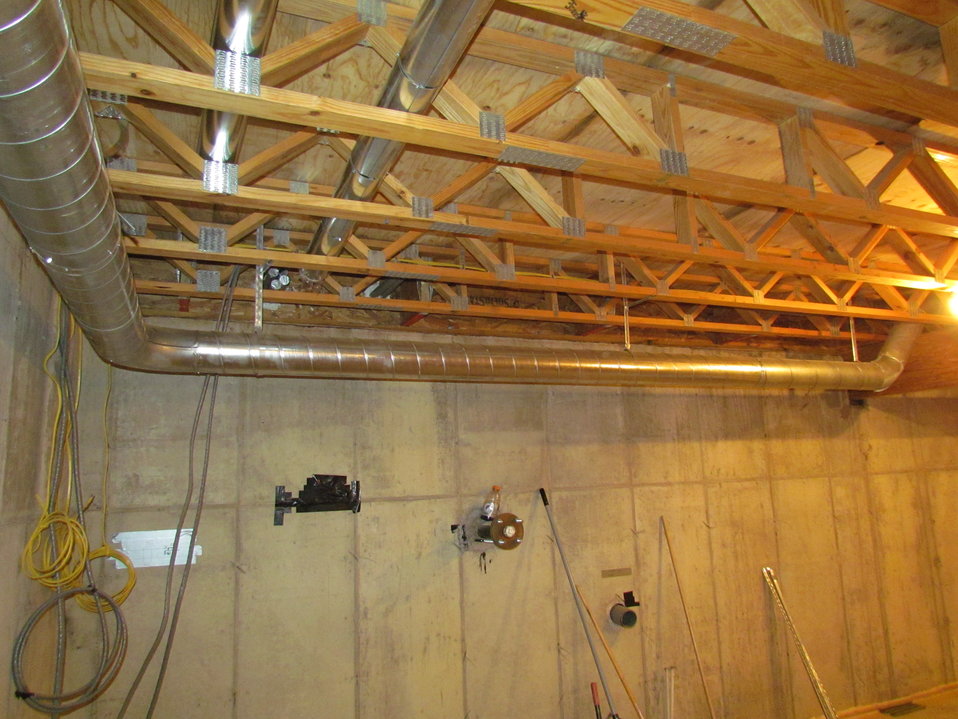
Net-Zero Energy Residential Test Facility - Photo showing southwest corner of basement.